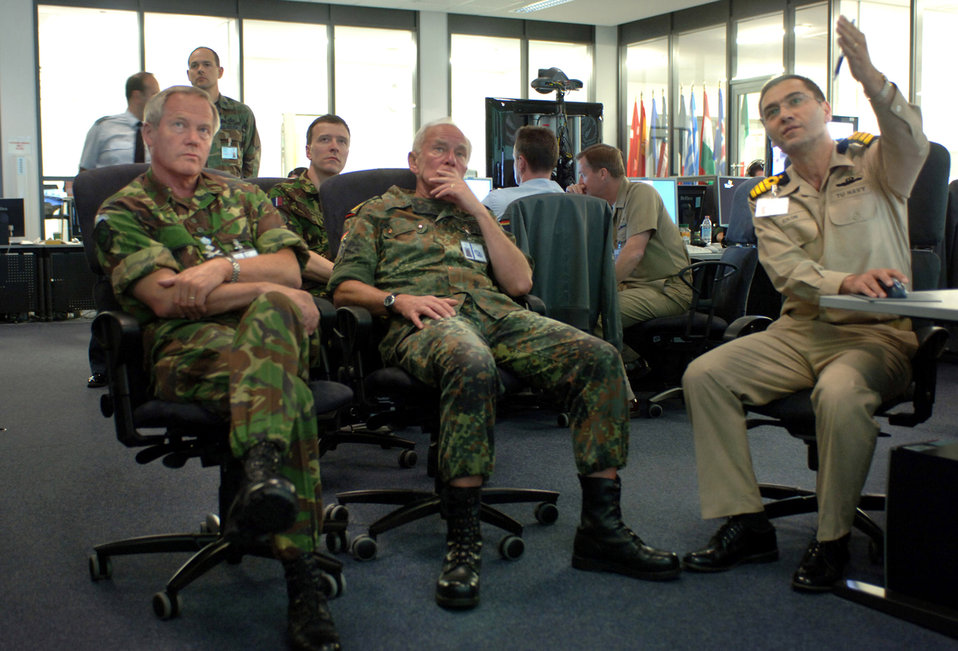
NATO Response Force works to improve communications

British Gen. Sir John Reith and German Gen. Ranier Shuwirth receive an operations brief May 3 from Turkish Naval Capt. Cengiz Ekin on an interactive software tool used to assess battlefield operations at Allied Air Component Command Headquarters at Ramstein Air Base, Germany. The NATO commanders and representatives from 26 NATO nations were attending the week-long NATO Response Force Exercise Allied Reach '07. General Reith is the deputy Supreme Allied Commander Europe, and General Shuwirth is the SHAPE chief of staff.